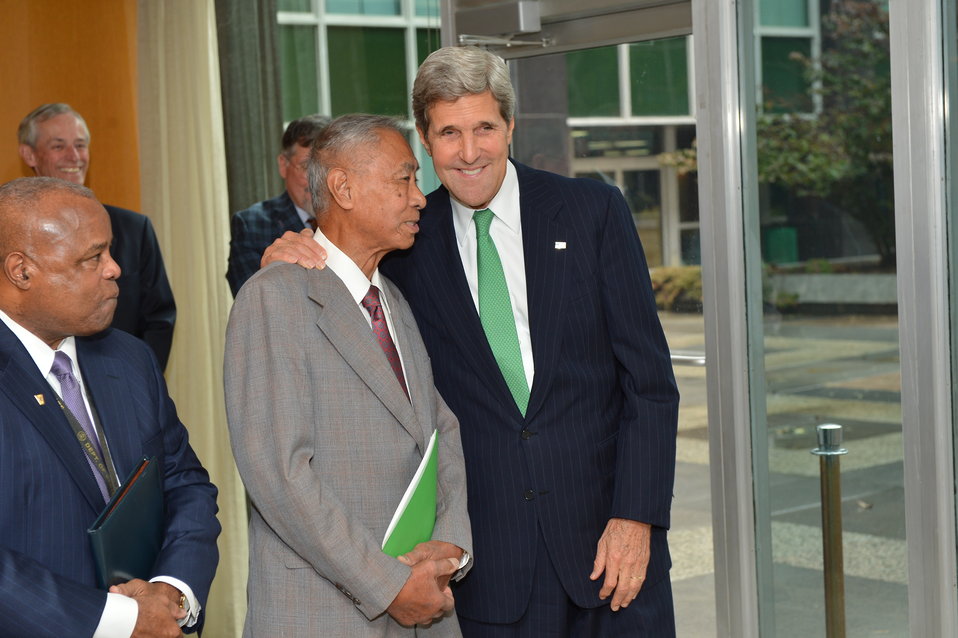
Secretary Kerry Speaks With U.S Air Force Maj. Jesse M. Baltazar During a Veterans Roll Call Event

U.S. Secretary of State John Kerry speaks with retired U.S Air Force Maj. Jesse M. Baltazar, a survivor of the Bataan Death March and a World War II, Korean War, and Vietnam War veteran, during the Veterans Roll Call event. The event honors Department Veterans by stating name, branch of service, and years served at the U.S. Department of State in Washington, D.C., on November 1, 2013.